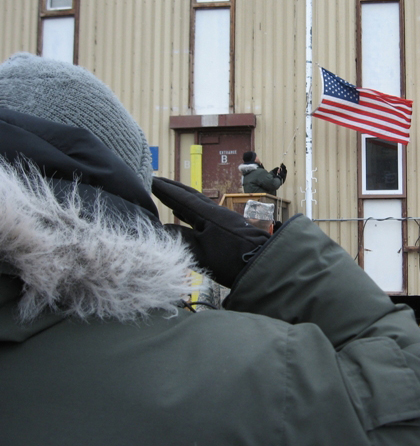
ODF retreat

As the 2009-2010 Operation Deep Freeze season winds down, Airmen at McMurdo Station, Antarctica, hold a retreat ceremony Feb. 16 2010, following the departure of the last LC-130 Hercules from the continent.